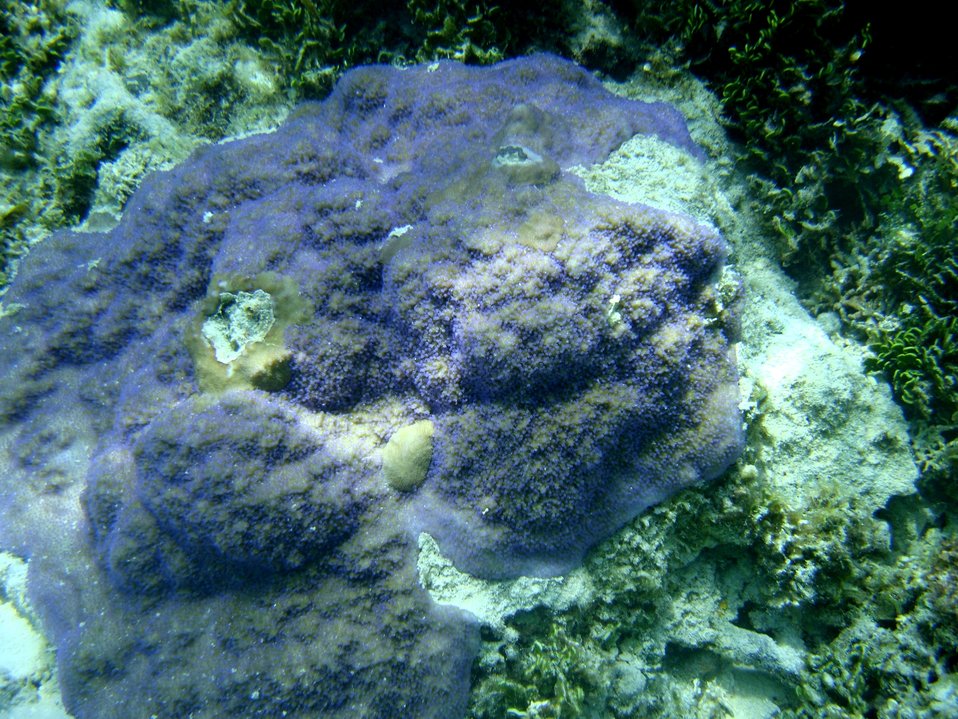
Acroporidae coral Montipora sp.